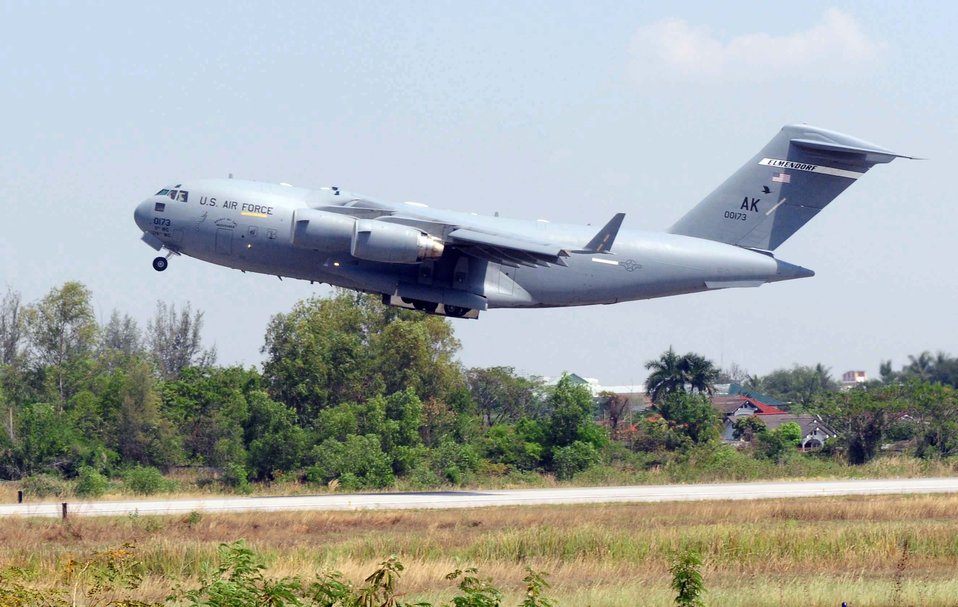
Flying operations begin at Cope Tiger 2010

A C-17 Globemaster III from the 3rd Wing at Elmendorf Air Force Base, Alaska, departs Udon Thani Royal Thai Air Force Base, Thailand, for a low-level airdrop March 1 as part of Cope Tiger 2010.